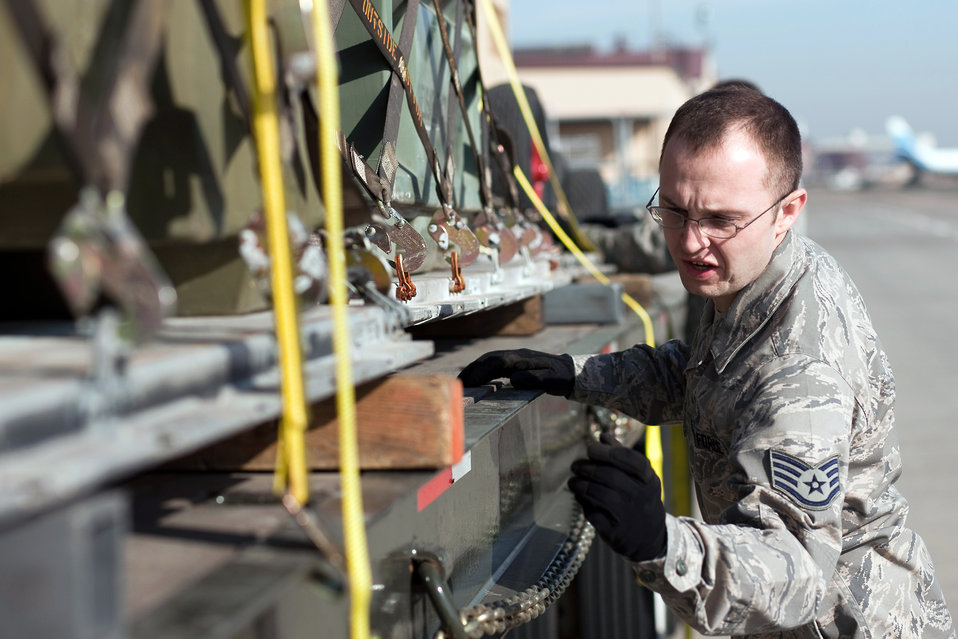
Earthquake and tsunami recovery effort

Staff Sgt. Chase Neufeld, 374th Logistics Readiness Squadron, inspects cargos tighten up here March 14 to assist the earthquake and tsunami recovery effort.